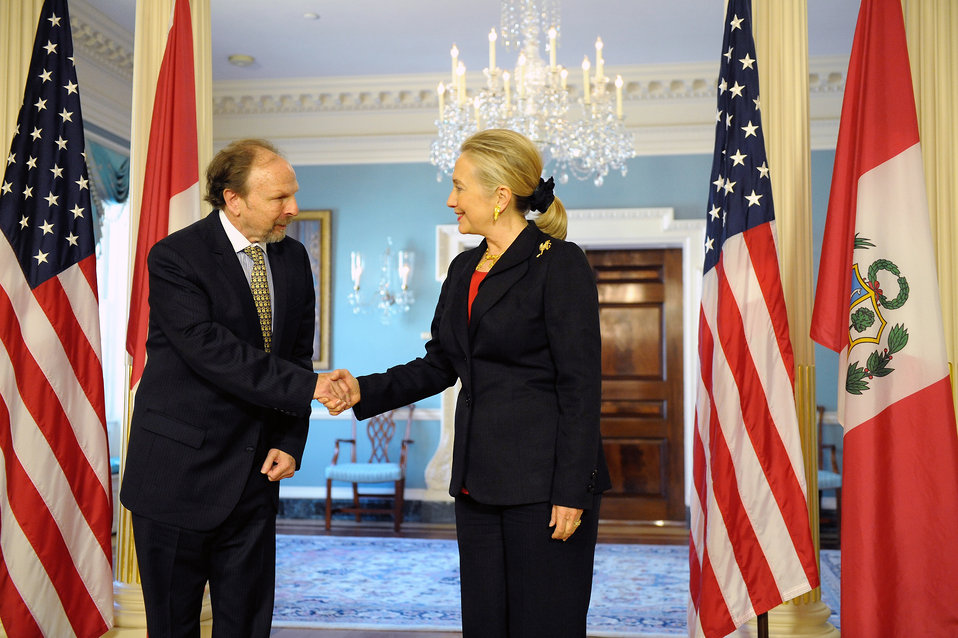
Secretary Clinton Meets With Peruvian Prime Minister Salomon Lerner Ghitis

U.S. Secretary of State Hillary Rodham Clinton meets with Peruvian Prime Minister Salomon Lerner Ghitis at the U.S. Department of State in Washington, D.C., on October 25, 2011.